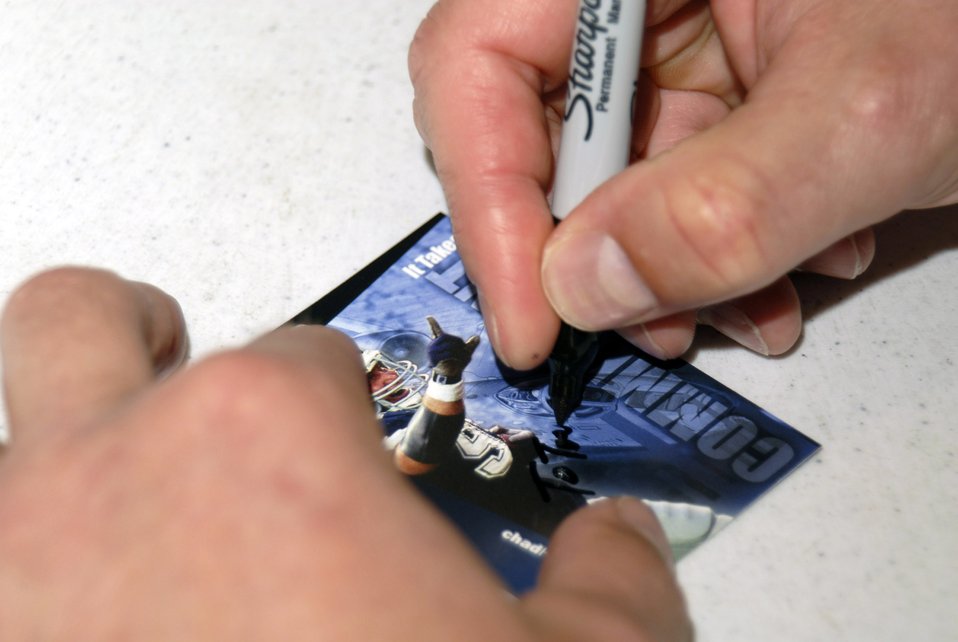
Former A-10 pilot, Cowboy speaks at Pentagon

Chad Hennings, a former A-10 pilot and Dallas Cowboy signs cards for Airmen at the Pentagon March 27. Mr. Hennings is a motivational speaker and discussed the challenges of balancing career and family as well as his life experiences in the Air Force and the NFL.